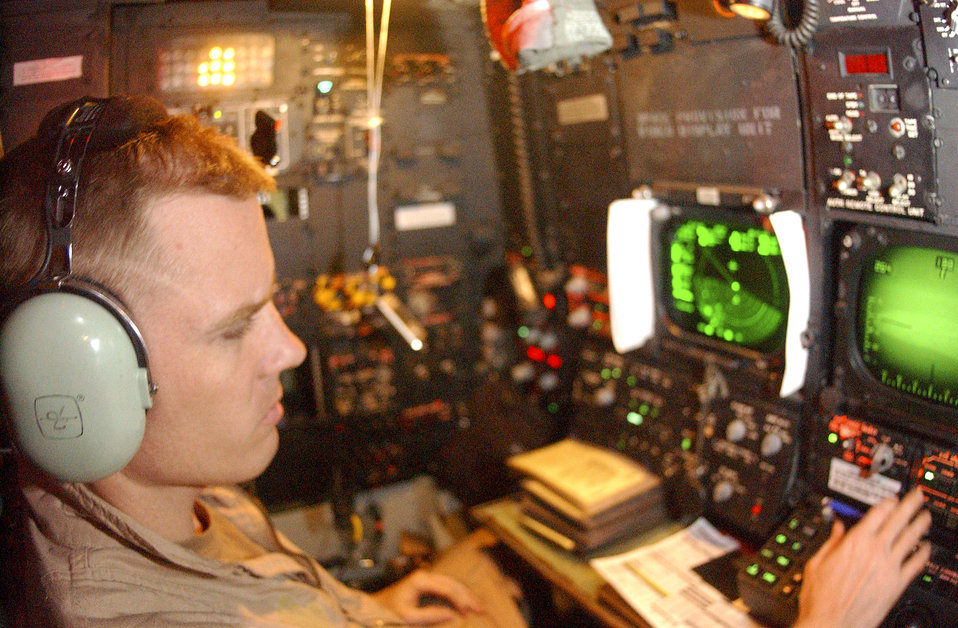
Optical viewing

OPERATION IRAQI FREEDOM -- A 40th Expeditionary Bomb Squadron radar navigator adjusts the Electronic Optical Viewing system during a B-52 bombing mission over Iraq.